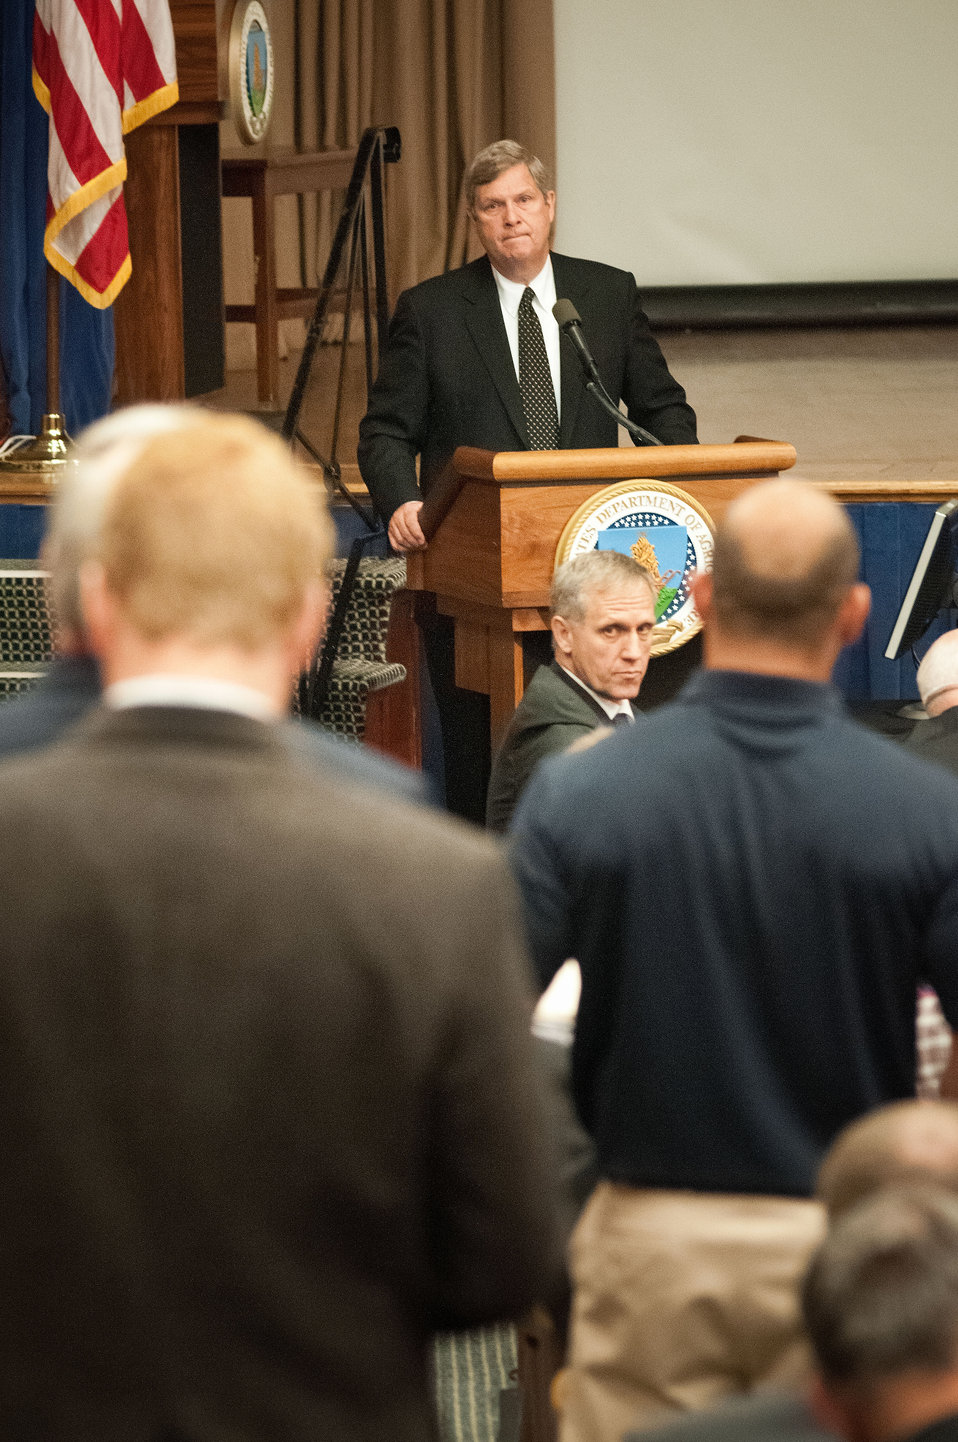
Agriculture Secretary Tom Vilsack listens to questions posed by members of the National Farmers Union at the U.S. Department of Agriculture (USDA) in Washington, D.C. on Monday, Sept. 10, 2012. Secretary Vilsack discussed the economics of agriculture, conservation, exports, Rural America and the 2012 Farm Bill. Seated in front of the podium is Roger Johnson, President, National Farmers Union.